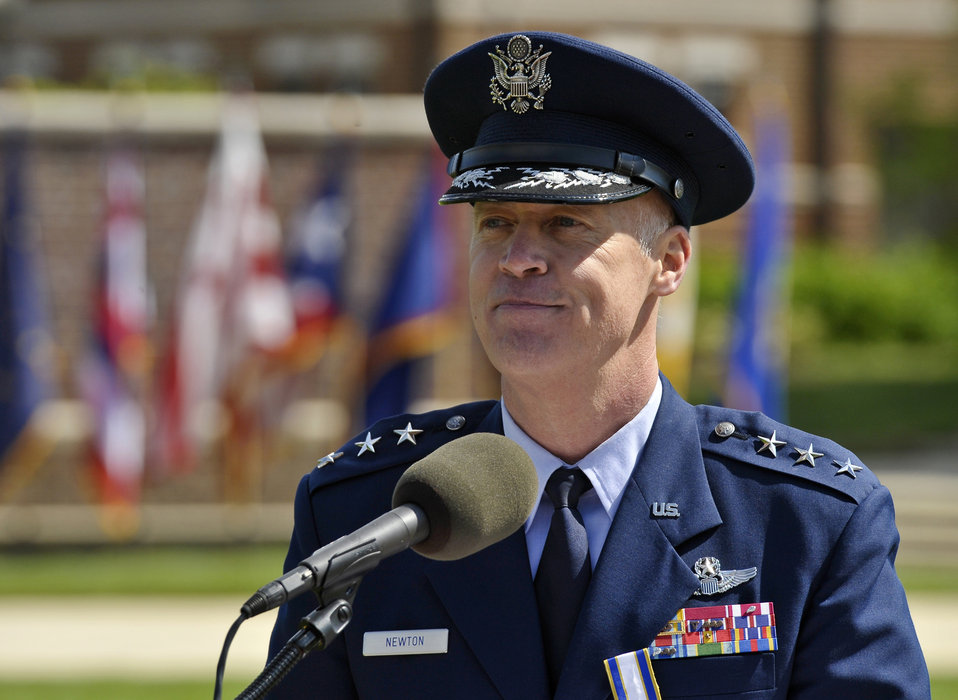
Senior Leader Retirement

Lt. Gen. Richard Y. Newton III, Assistant Vice Chief of Staff and Director, Air Staff, Headquarters U.S. Air Force, delivers remarks following his retirement ceremony hosted by Air Force Chief of Staff Gen. Norton Schwartz on Joint Base Anacostia-Bolling, D.C., on April 27, 2012. Newton retires after 34 years of active military service.